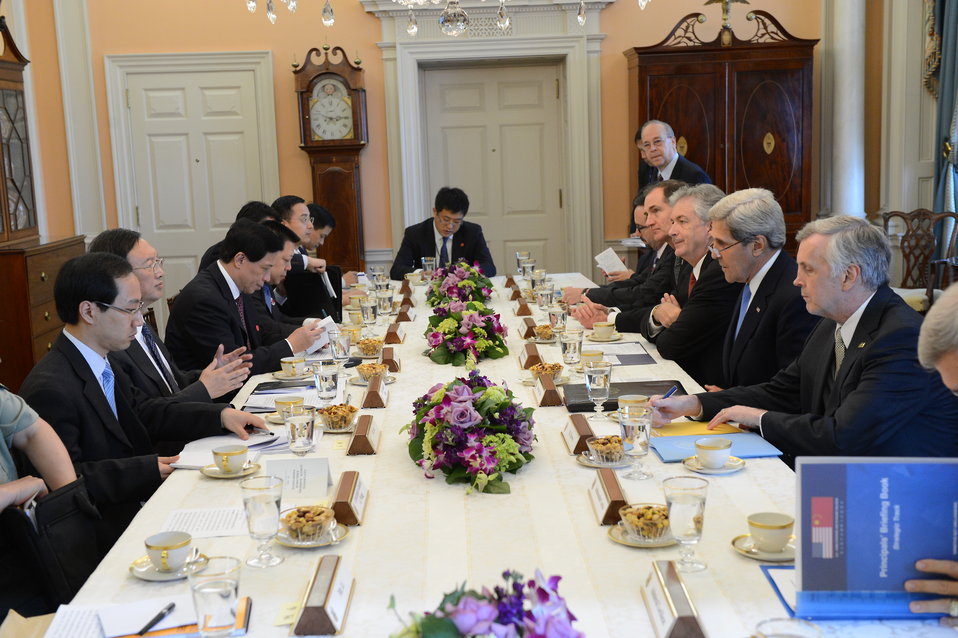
Secretaries Kerry and Lew, Chinese State Councilor Yang, and Chinese Vice Premier Wang Participate in the Strategic Track Small Session

U.S. Secretary of State John Kerry, U.S. Secretary of Treasury Jacob Lew, Chinese State Councilor Yang, and Chinese Vice Premier Wang participate in the U.S.-China Economic and Strategic Dialogue Strategic Track Small Session at the U.S. Department of State in Washington, DC on July 10, 2013.